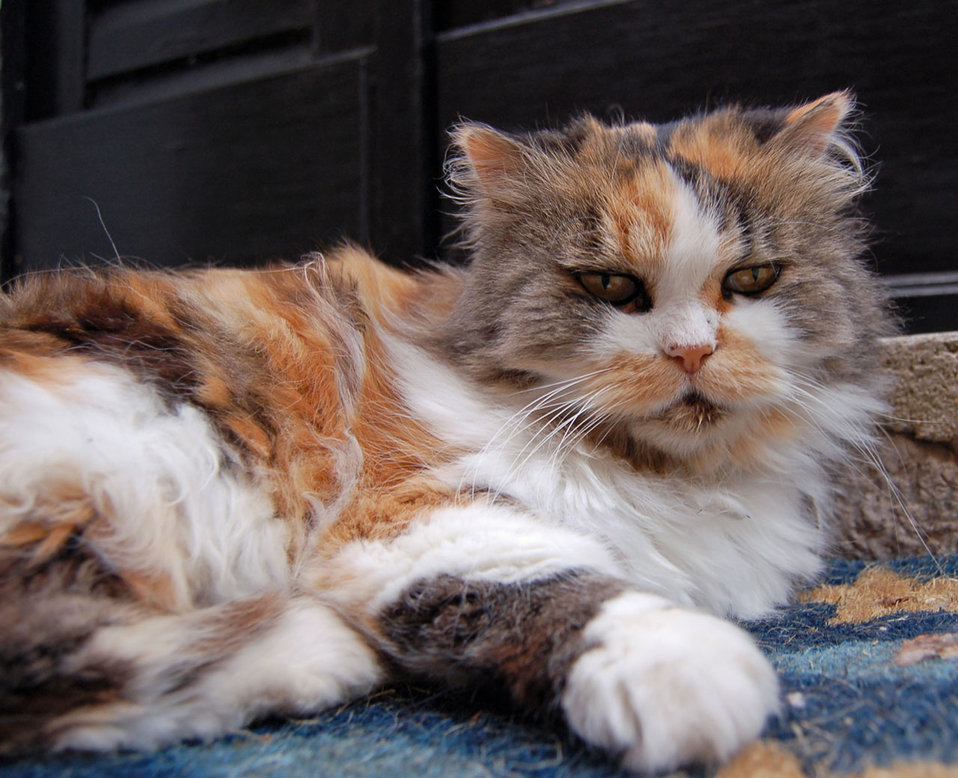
Unusual cat

Multi-coloured cat lying on a doormat.